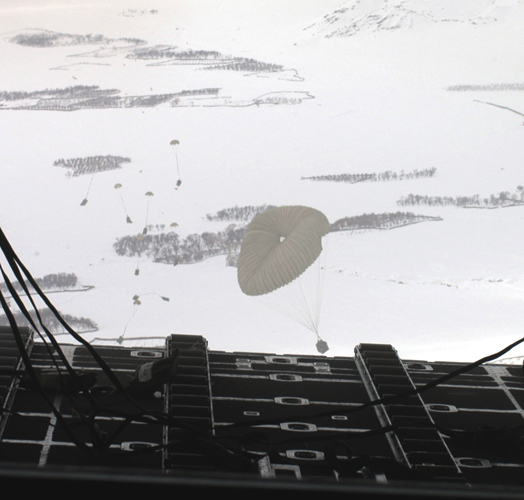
Airmen drop vital supplies to troops in Afghan mountains

OVER AFGHANISTAN -- Humanitarian supplies drop from the back of a C-130 Hercules.